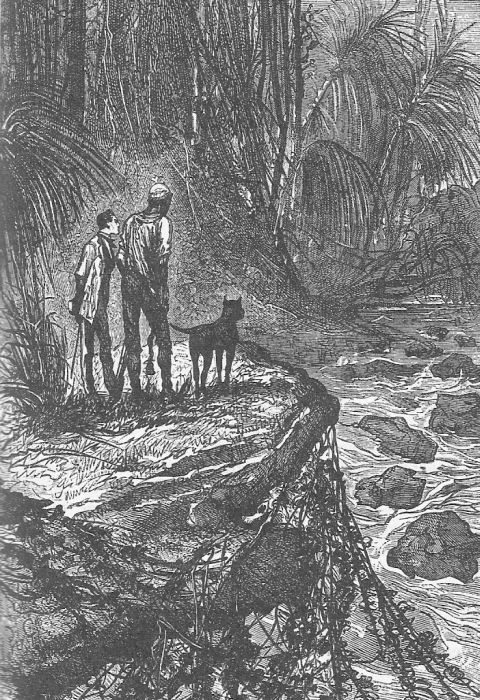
An illustration from Jules Verne's novel 'The Adventures of Three Englishmen and Three Russians in South Africa' (1870) drawn by Jules Férat. Polski: Ilustracja powieści Juliusza Verne'a 'Przygody trzech Rosjan i trzech Anglików w południowej Afryce' (1870) autorstwa Julesa Férata. Français : Jules Verne: 'Aventures de trois russes et de trois anglais dans l’Afrique australe' (1870), dessins par Jules Férat.